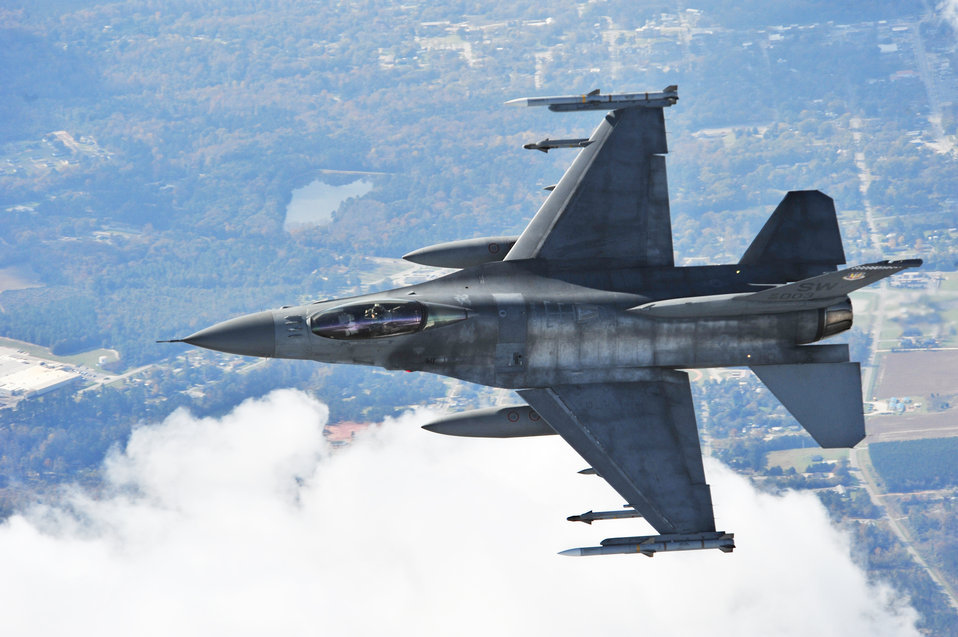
Alert mission protects U.S. airspace, interests

Capt. Matthew Feeman in an F-16 Fighting Falcon approaches a Cessna airplane, flown by South Carolina's Civil Air Patrol, to initiate a